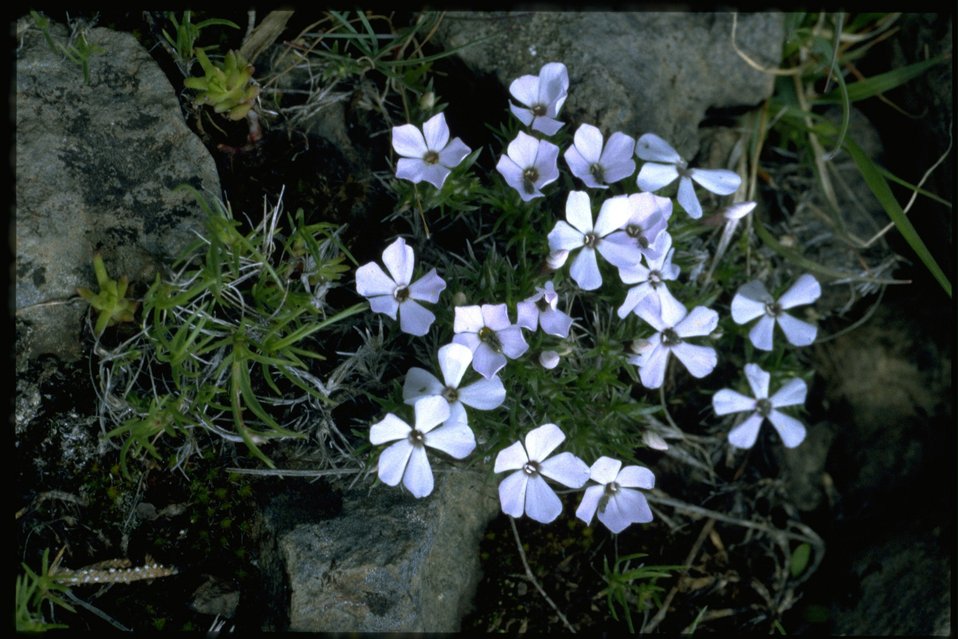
Medium shot of Hood's Phlox, Phlox Hoodii, wildflowers.